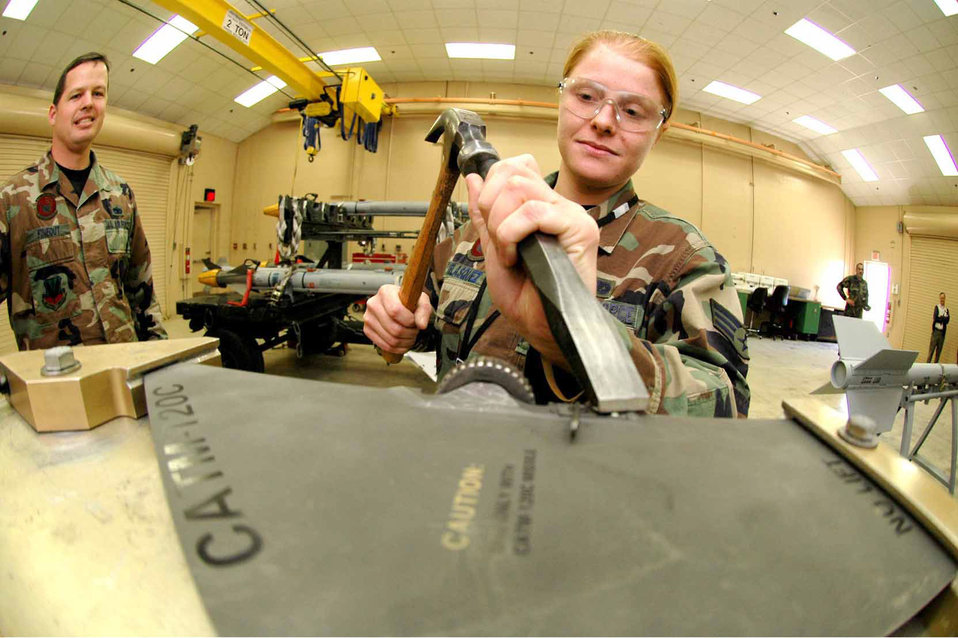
Small office comes up big

EGLIN AIR FORCE BASE, Fla. (AFPN) -- Senior Airman Theresa Velasquez removes a rivet on an AIM-120 fin using a fixture created by the munitions materiel handling equipment focal point here. Before the crew had this piece of equipment it could not change the locks and had to send the fin off for a depot-level repair. This process would have taken at least a month and now it is done within minutes inside the shop. Airman Velasquez is a precision-guided munitions crewmember assigned to the 33rd Maintenance Squadron.